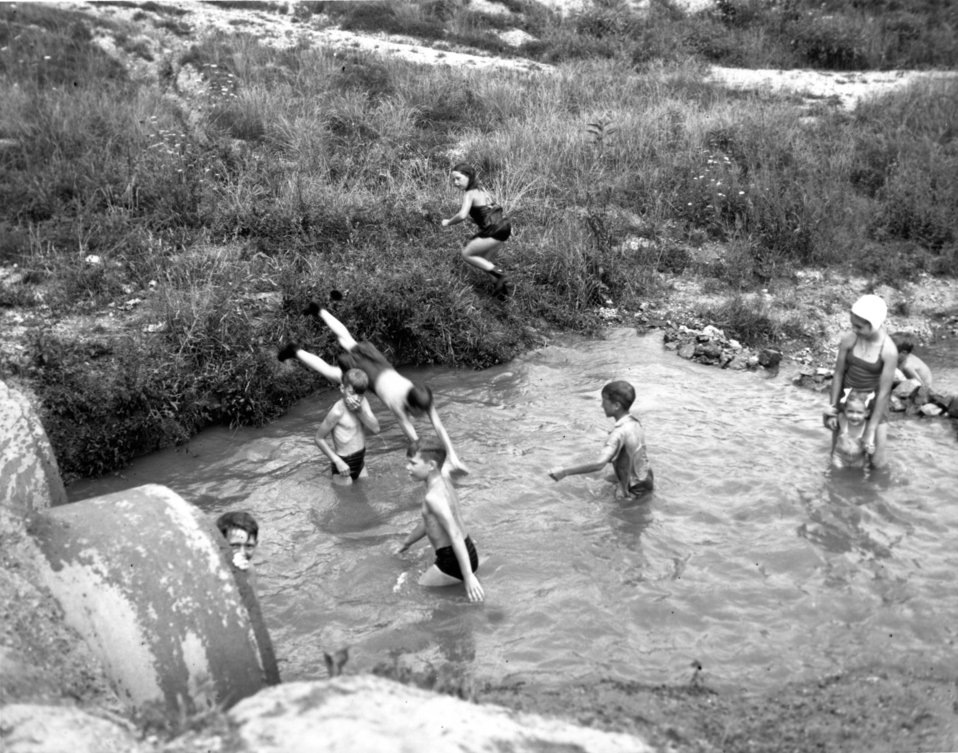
Recreation at Oak Ridge